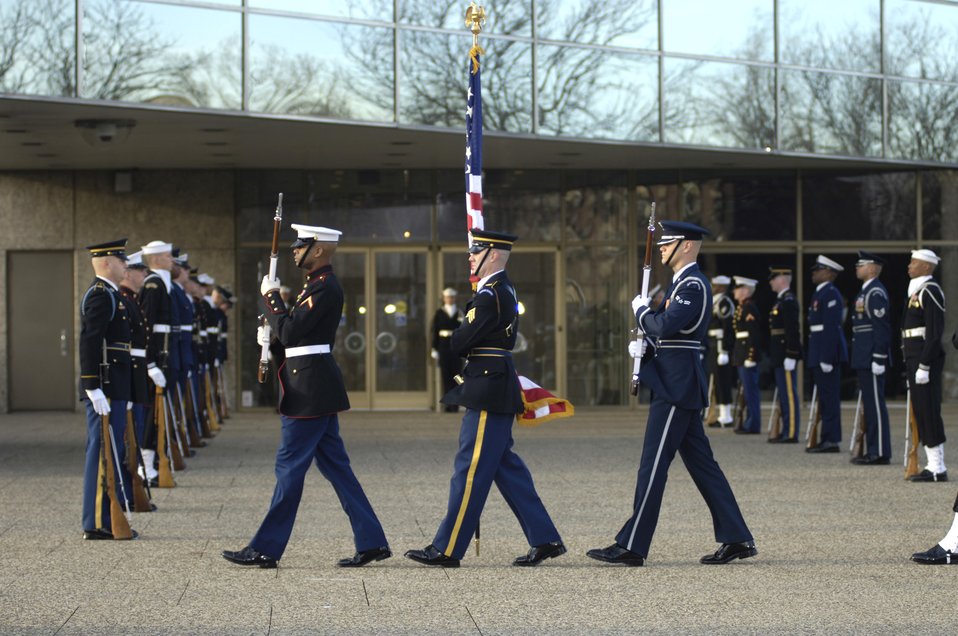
Honor Guard gives President Ford final honors

The Armed Forces Honor Guard prepares for the arrival of President Gerald R. Ford's body in front of the the Gerald R. Ford Presidential Library and Museum Jan. 2 in Grand Rapids, Mich.